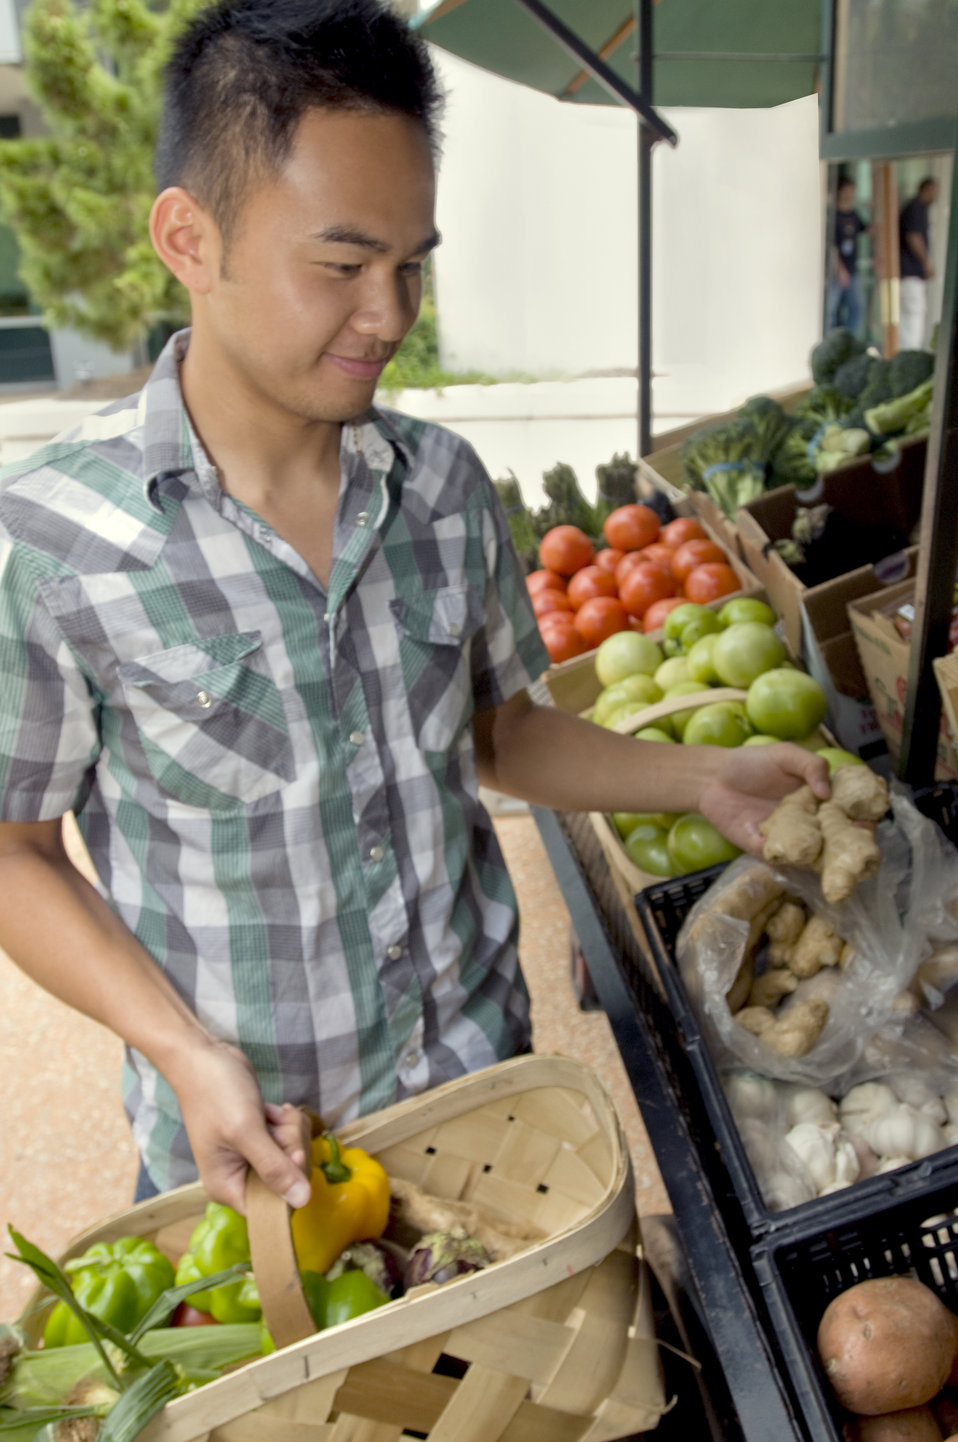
This man was photographed as he was shopping for groceries at a mobile Georgian farmers market at a point in his activity where he was picking out some ginger root in the market's produce section. Here he appears to have made his choice, holding the root in his left hand before adding it to a woven wooden basket.